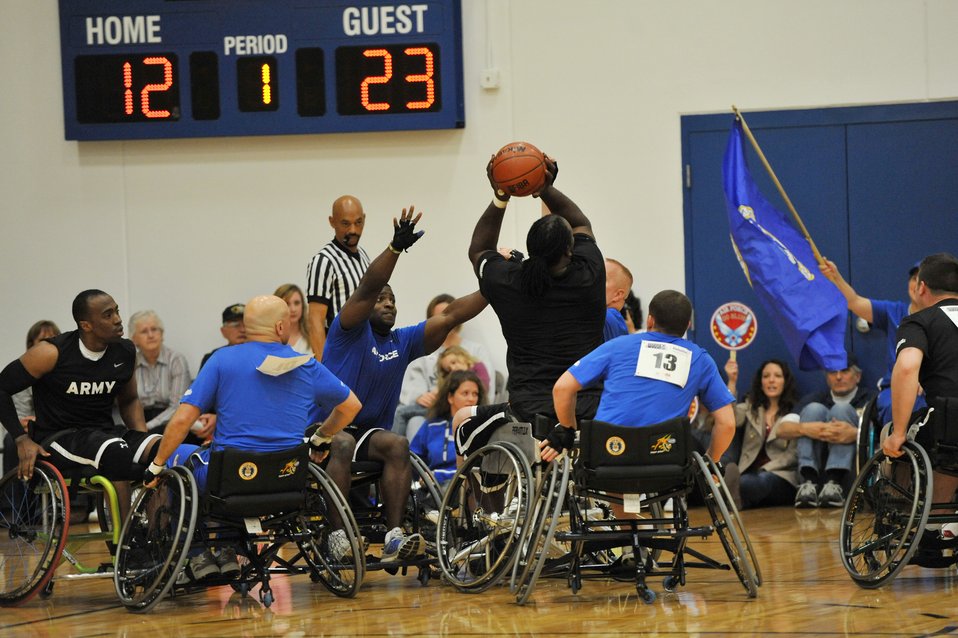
basketball prelims

Members of the Air Force wheelchair basketball team compete May 18, 2011, during the Warrior Games at the U.S. Olympic Training Center in Colorado Springs, Colo. Some 200 wounded warriors and disabled veterans from all of the military services competed in paralympic-style athletic events May 16 to 21.